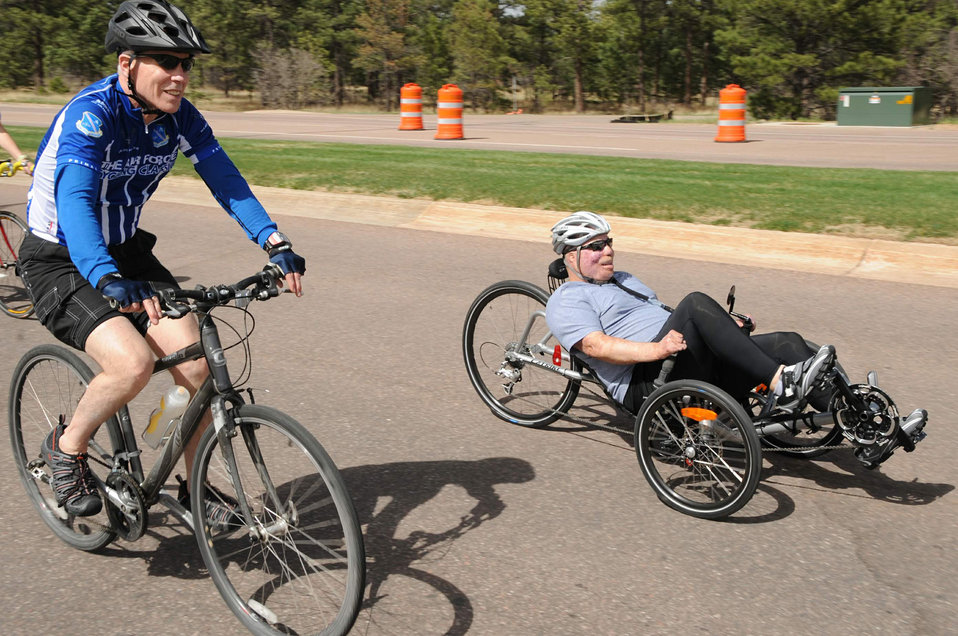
AFSPC commander welcomes AF Wounded Warriors, kicks off 2011 competition

Tech. Sgt. Israel Del Toro and Gen. William Shelton finish the final mile of a six-mile Warrior Games cycling course May 8, 2011, during the team's practice at the Air Force Academy in Colorado Springs Colo. The 2011 Warrior Games are scheduled to run May 16 through 28. Sergeant Del Toro is a competitor at this year's Warrior Games, and General Shelton is the Air Force Space Command commander.